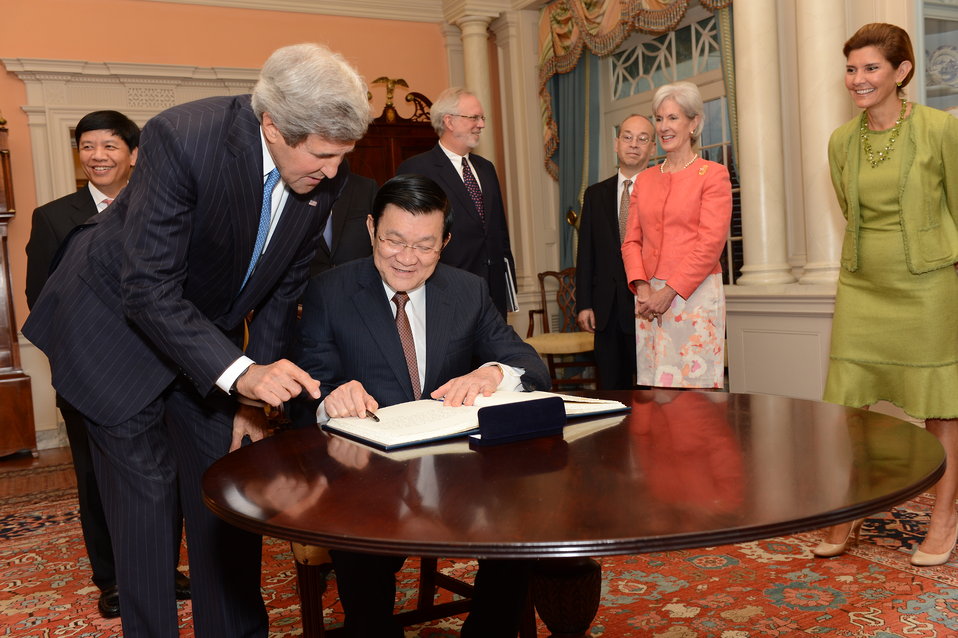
Vietnamese President Truong Tan Sang Signs Secretary Kerry's Guestbook

Vietnamese President Truong Tan Sang signs U.S. Secretary of State John Kerry's guestbook before their working lunch at the U.S. Department of State in Washington, D.C., on July 24, 2013.